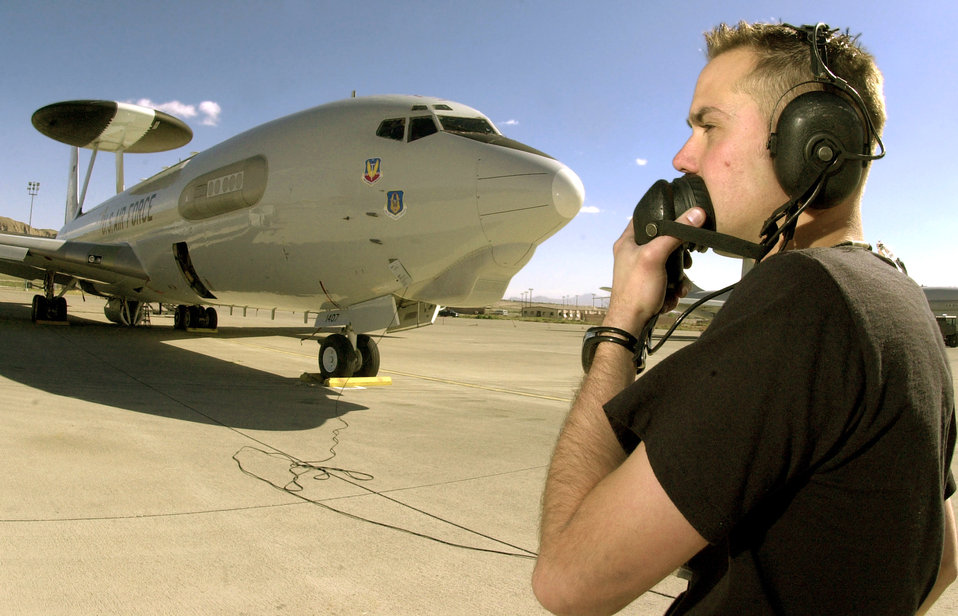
Flag it

NELLIS AIR FORCE BASE, Nev. -- Staff Sgt. Trevor Wilson prepares an E-3 Sentry Airborne Warning and Control System aircraft for flight during Joint Red Flag 2005 here March 28. About 10,000 U.S. servicemembers and coalition forces are participating in the exercise here and at Fort Hood, Texas, and Fort Bliss, Texas, until April 2. Sergeant Wilson is a crew chief with Air Force Reserve Command's 513th Air Control Group from Tinker Air Force Base, Okla.